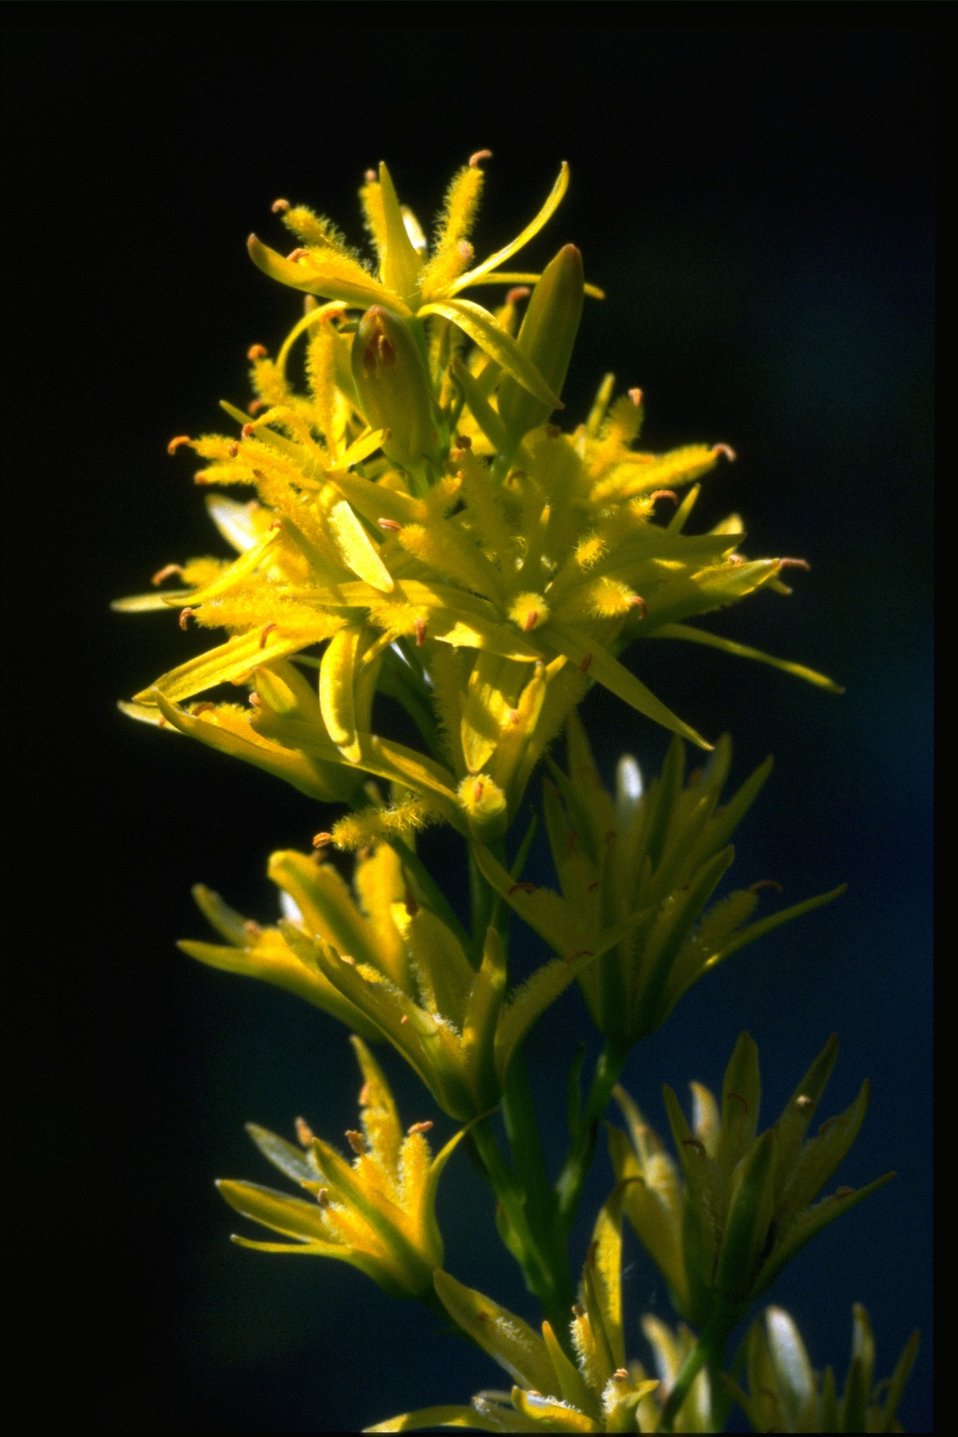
Closeup shot of Northecium californicum.